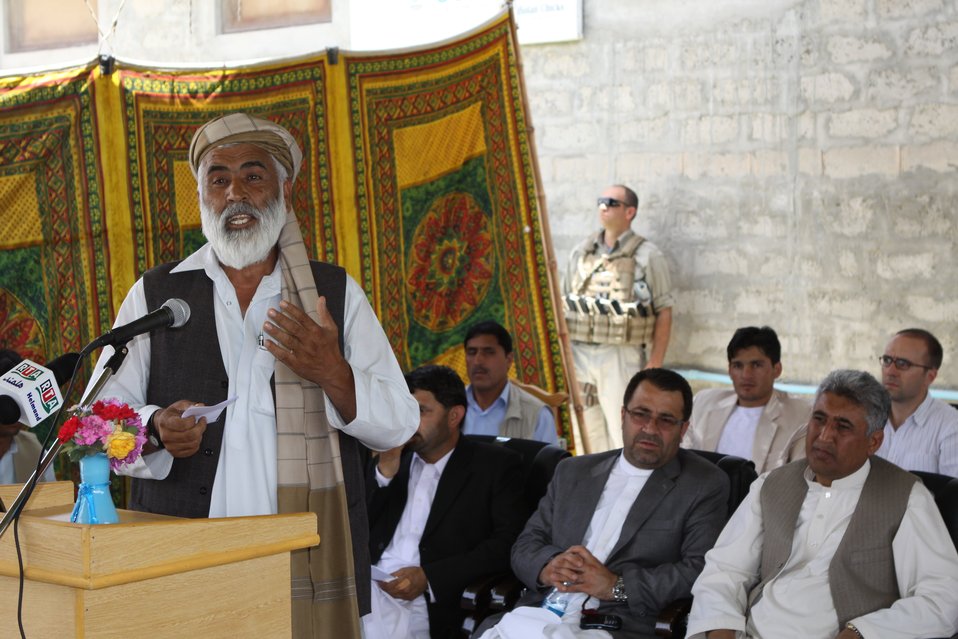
Bolan Poultry Farm